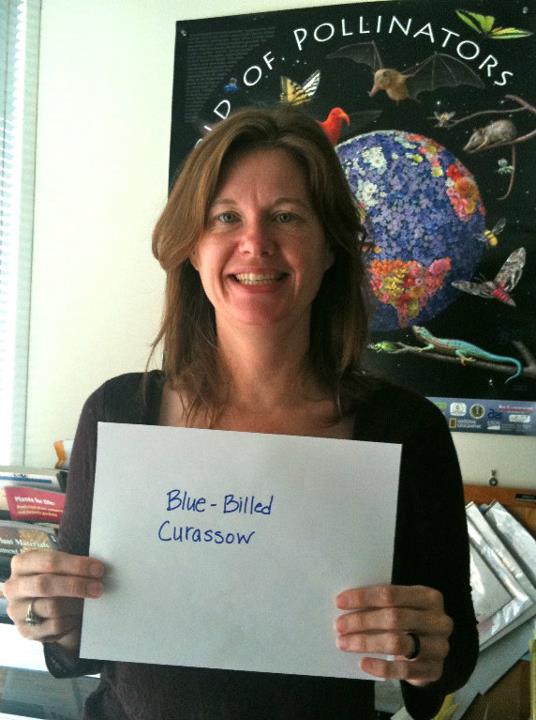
Patricia DeAngelis, 'Blue-Billed Curassow,'

International Affairs participates in FFI's In Our Hands campaign